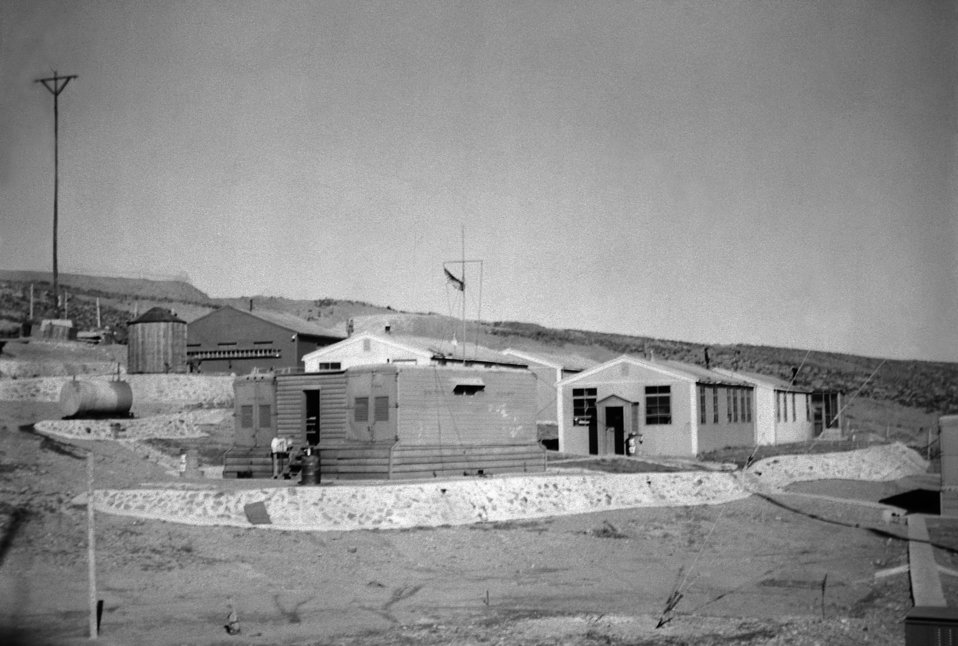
LORAN Station in Korea, in the 14th CG District.